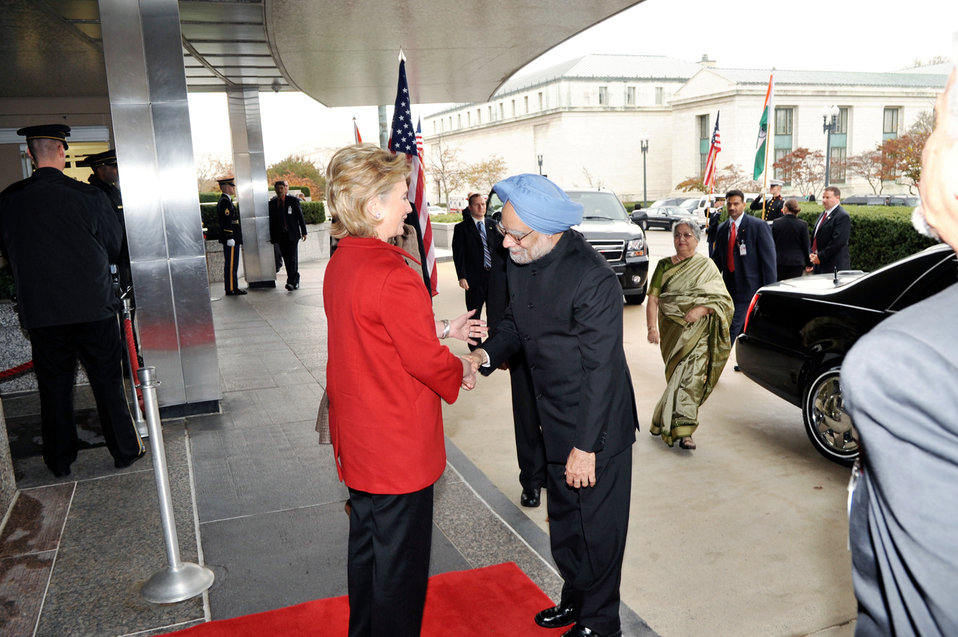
Vice-President Biden, Secretary Clinton Co-Host Social Lunch in Honor of Indian Prime Minister

U.S. Vice-President Joe Biden Dr. Jill Biden co-host a social lunch with U.S. Secretary of State Hillary Rodham Clinton in honor of Indian Prime Minister H.E. Dr. Manmohan Singh and Dr. Gurusharan Kaur at the U.S. Department of State in Washington, DC November 24, 2009.